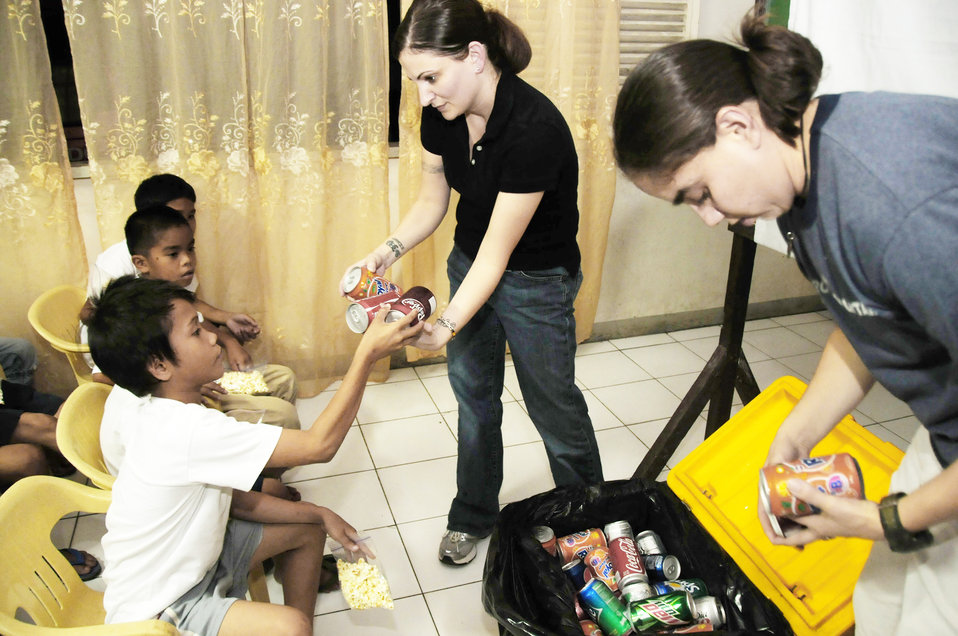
Women handing out drinks

Tech. Sgt. Amber Pacheco (left) and Petty Officer 2nd Class Nilsa Elizondo, both assigned to Joint Special Operations Task Force-Philippines, hand out sodas Dec. 23, 2009, during movie night at the Social Development Center in Zamboanga, Philippines.